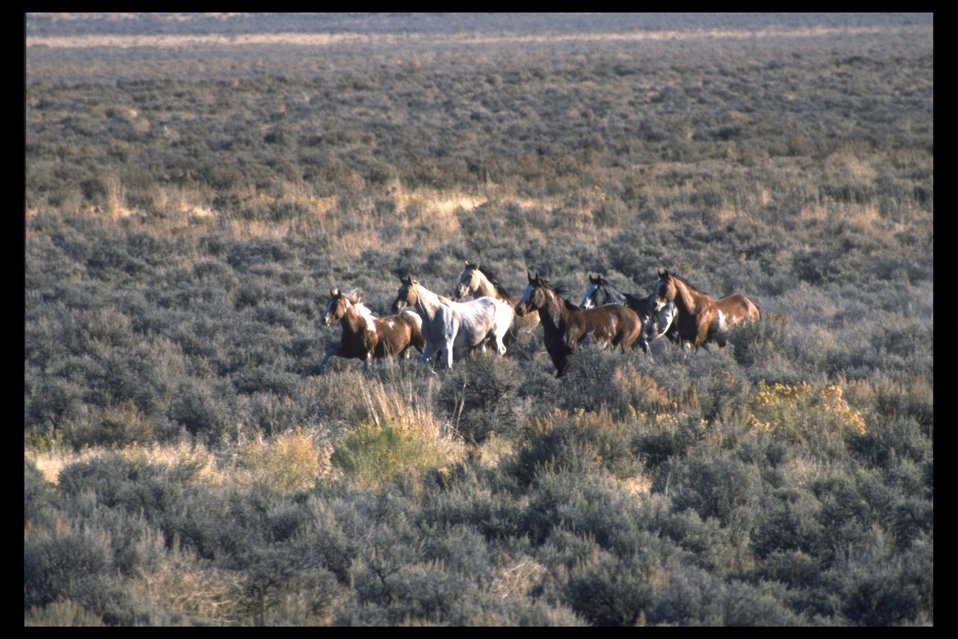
Wild horses approach trap in the South Steens Horse Management Area.